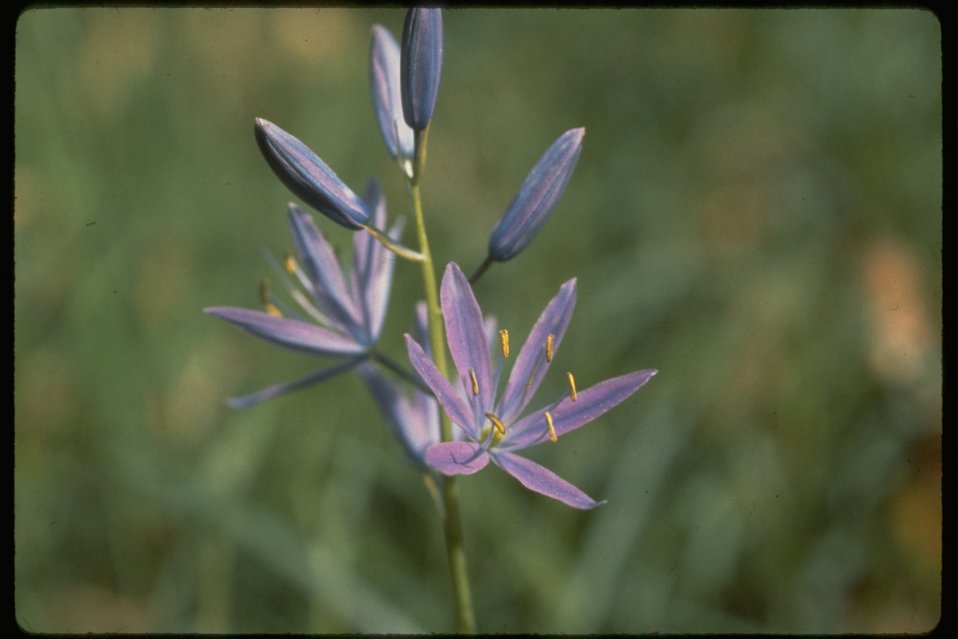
Camas of the genus camassia with edible bulbs.